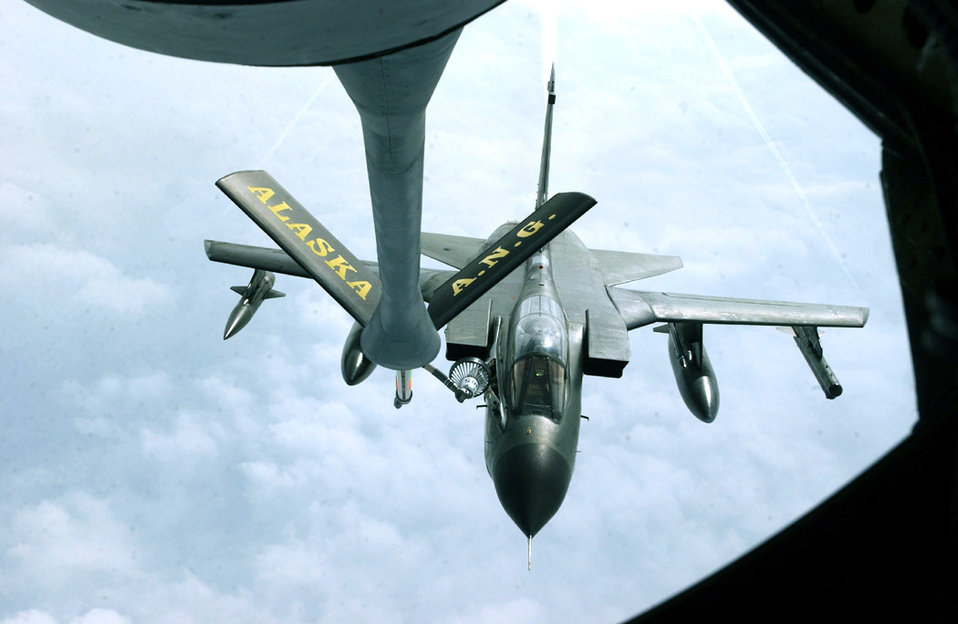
Cooperative Cope Thunder 2004-01

OVER ALASKA (AFPN) -- A German GR-4 Tornado uses a KC-135R Stratotanker drogue during a refueling mission July 21 while participating in exercise Cooperative Cope Thunder 2004-01. The tanker and crew are assigned to the Alaska Air National Guard's 168th Air Refueling Squadron at Eielson Air Force Base, Alaska.